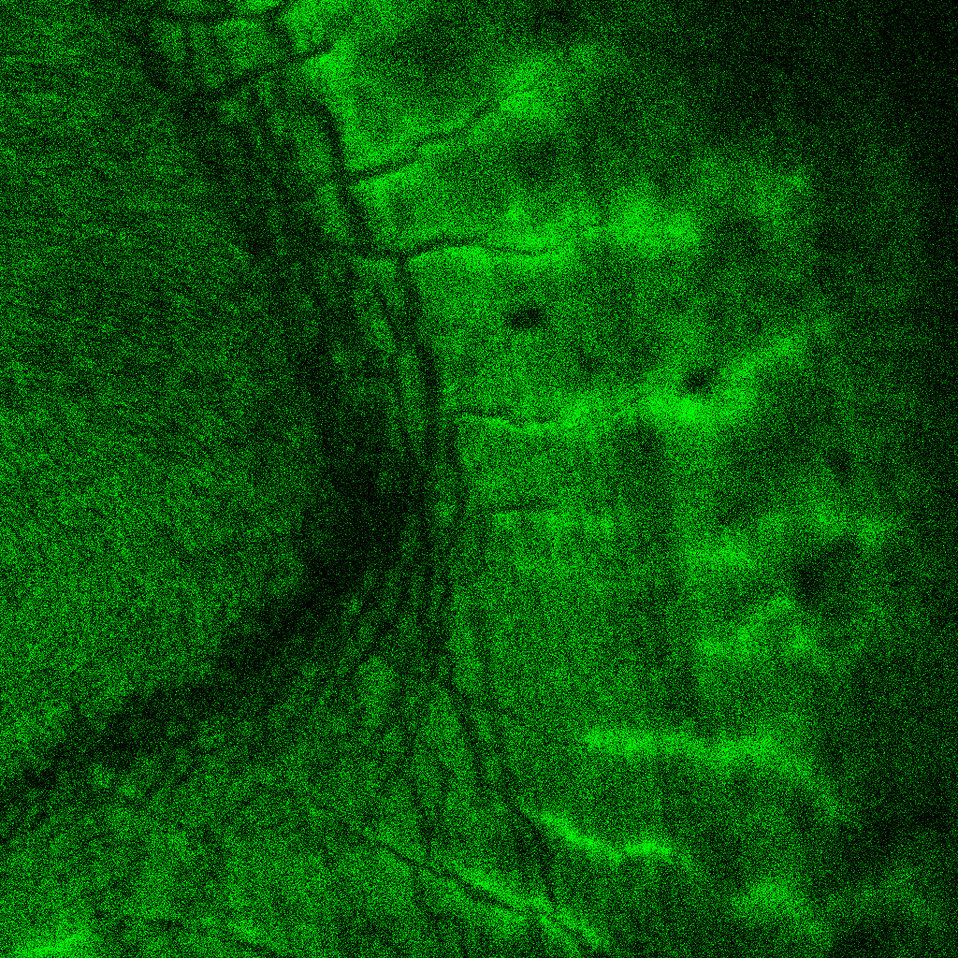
Hydroxyapatite Crystal

Deposits of hydroxyapatite crystal light up bright green where they've been tagged with a new peptide created at NIST to bond specifically to the compound. The peptide has been linked to a fluorescent stain for imaging.